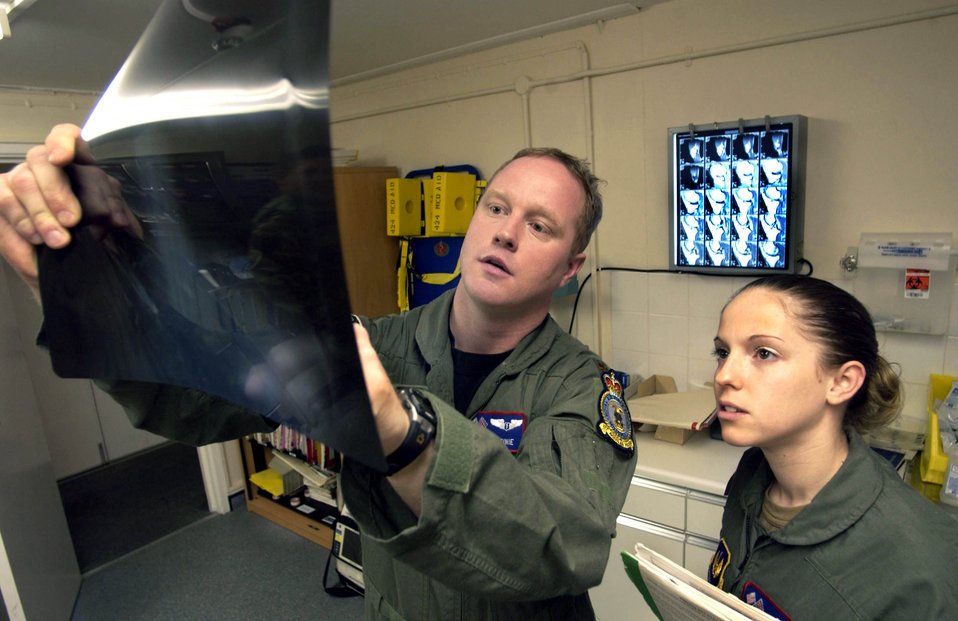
And the prognosis is...

ROYAL AIR FORCE FAIRFORD, England -- Maj. (Dr). Dan Martinie, a flight surgeon, discusses an X-ray with Staff Sgt. Laura Forgione, a medical technician. Both Airmen are responsible for more than 600 people deployed here from Royal Air Force Mildenhall. The 351st Air Refueling Squadron at Mildenhall will fly from here until September while the base's flightline is under construction. Both Airmen are assigned to the 351st ARS's medical element.